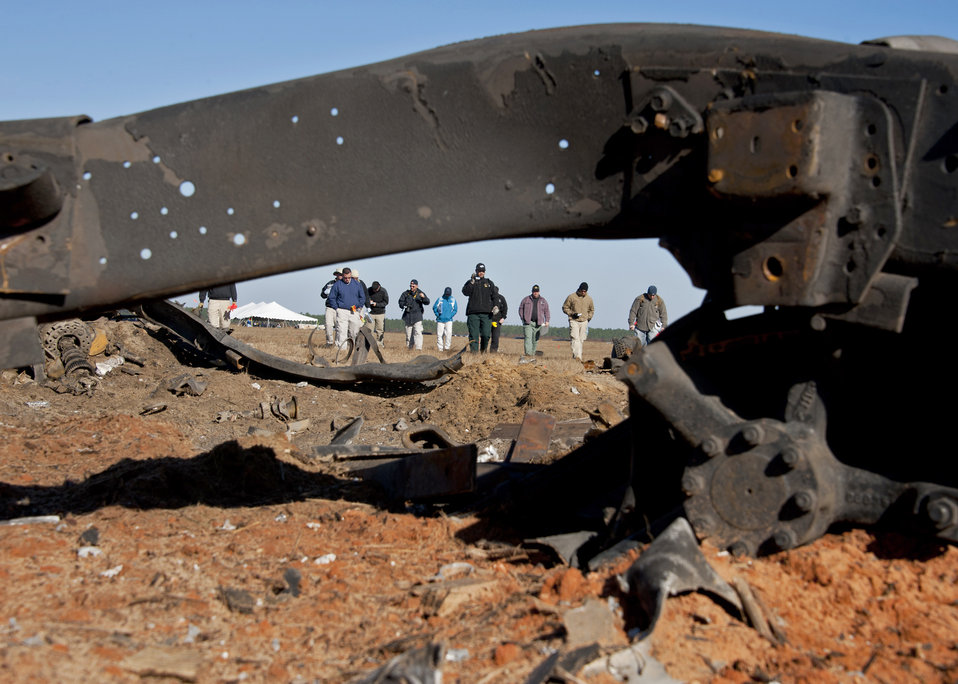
FBI training at Eglin

The preliminary investigation team approaches the wreckage of a box truck to begin looking for evidence and documenting the simulated crime scene Dec. 1, 2010, at Eglin Air Force Base, Fla. The investigations were part of the FBI's Large Vehicle Post-Blast School attended by state and local law enforcement agencies as well as Marine and Air Force explosive ordnance disposal technicians.